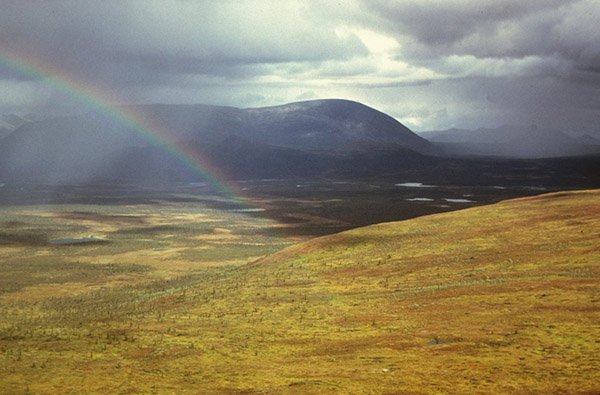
rainbow

Arctic National Wildlife Refuge, AK